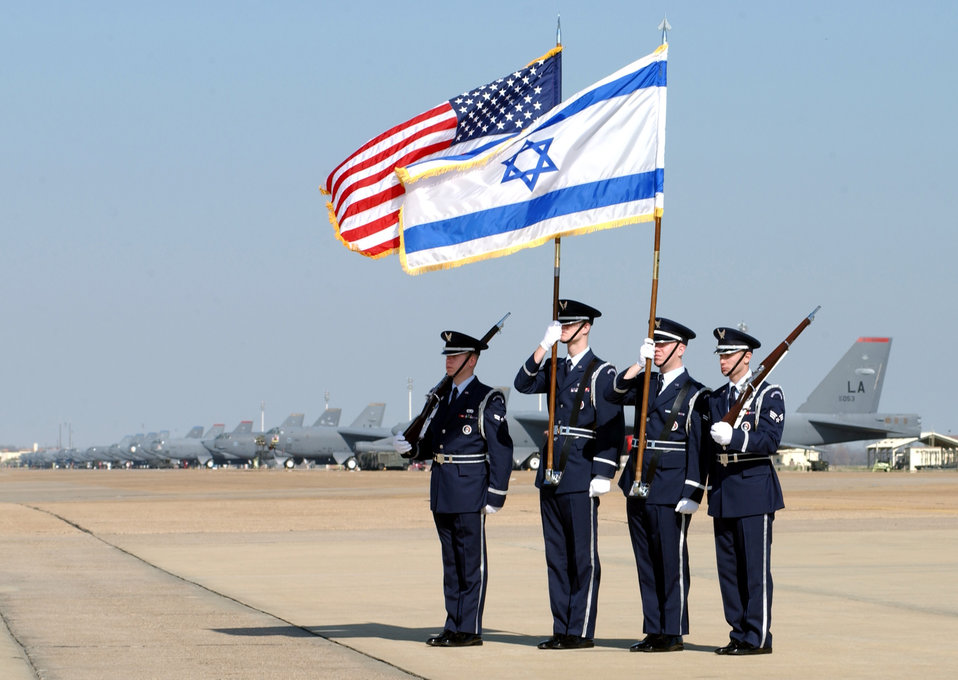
Honoring Columbia's crew

BARKSDALE AIR FORCE BASE, La. -- The base honor guard here honors the crew members of Space Shuttle Columbia on Feb. 12. The remains of all seven crew members were recovered and flown to the Dover Air Force Base, Del. mortuary, where they were identified.